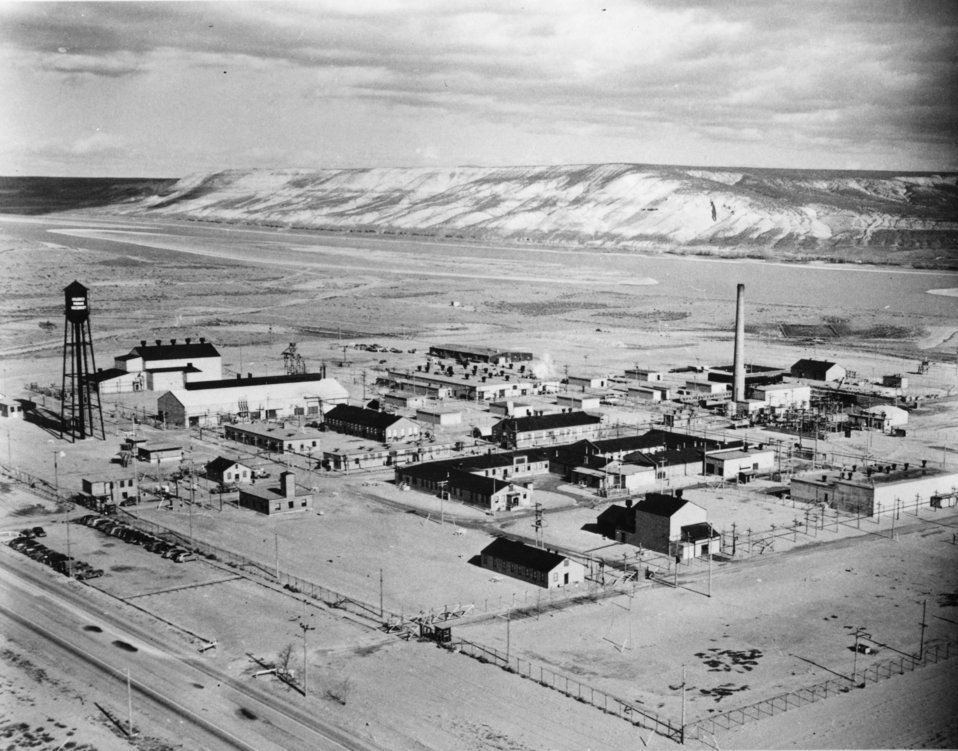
Aerial of Oak Ridge